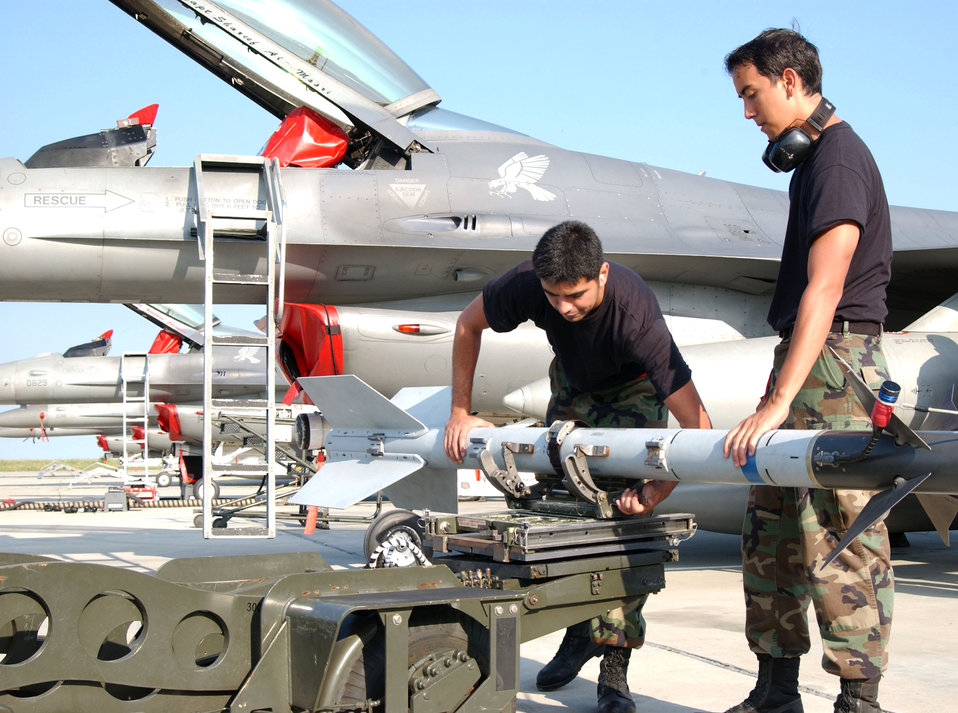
Maintainers keep jets healthy, safe during Viper Lance

Senior Airman Richard Bates (left) and Staff Sgt. Mark Pastian download a training missile from an F-16 Fighting Falcon on Aug. 18 during Exercise Viper Lance 2006 at Mihail Kogalniceanu Air Base, Romania. The Airmen are weapons load crew members with the 22nd Expeditionary Fighter Squadron.